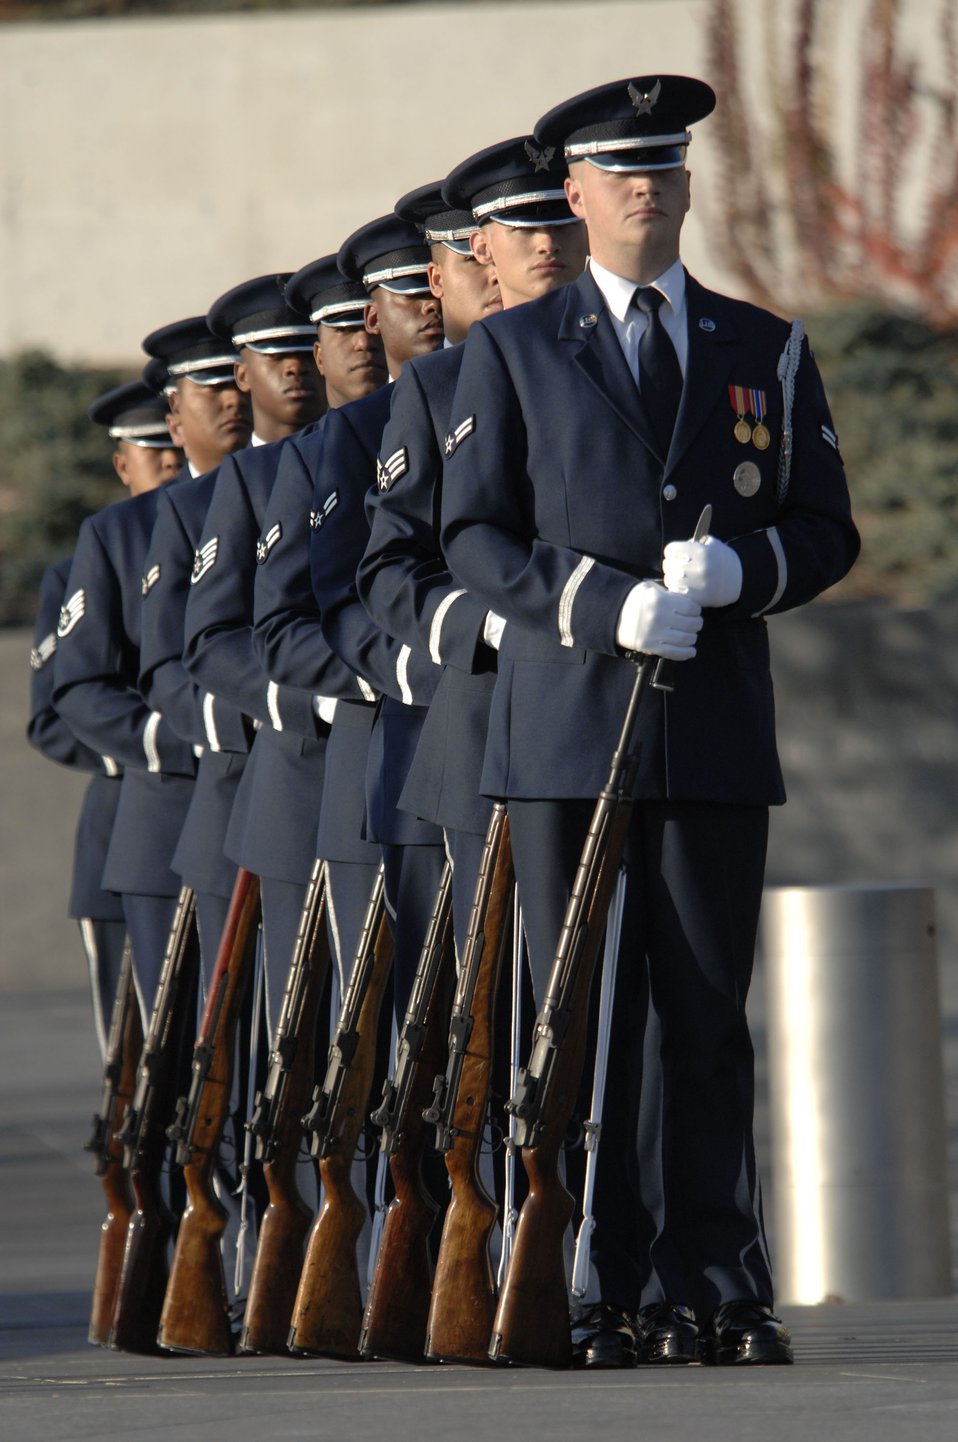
U.S. Air Force Honor Guard

United States Air Force Honor Guard members from Bolling Air Force Base, participate in a ceremony remembrance of fallen Air Force members from the past and present Nov. 10 in Arlington, Va.